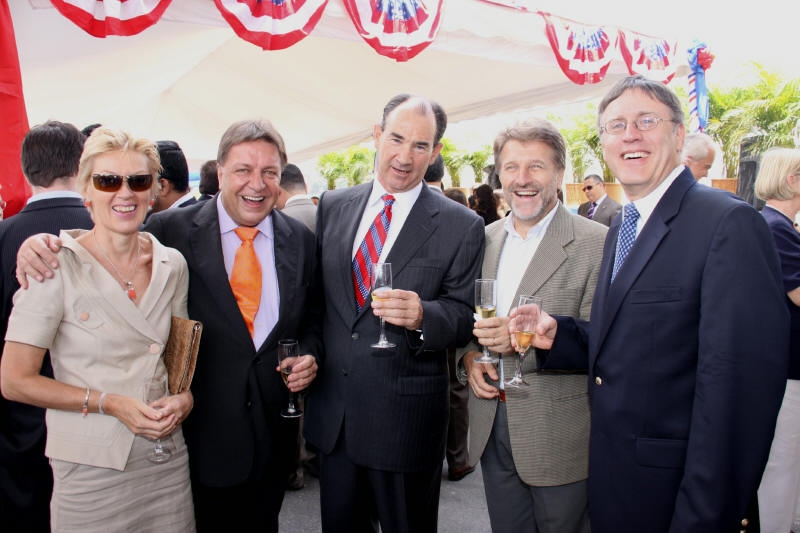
Global Ambassadors, Including Ambassador Duddy, Pose for a Photo

(Left to right) The wife of Bulgarian Ambassador to Venezuela, Anita Miriam Ivanov, Polish Ambassador to Venezuela Krzysztof Jacek Hinz, U.S. Ambassador to Venezuela Patrick D. Duddy, Bulgarian Ambassador to Venezuela Ventzislav Ivanov, and Canadian Ambassador to Venezuela Perry Calderwood pose for a photo at the U.S. Embassy Caracas in Venezuela's U.S. Independence Day celebration on June 30, 2010.